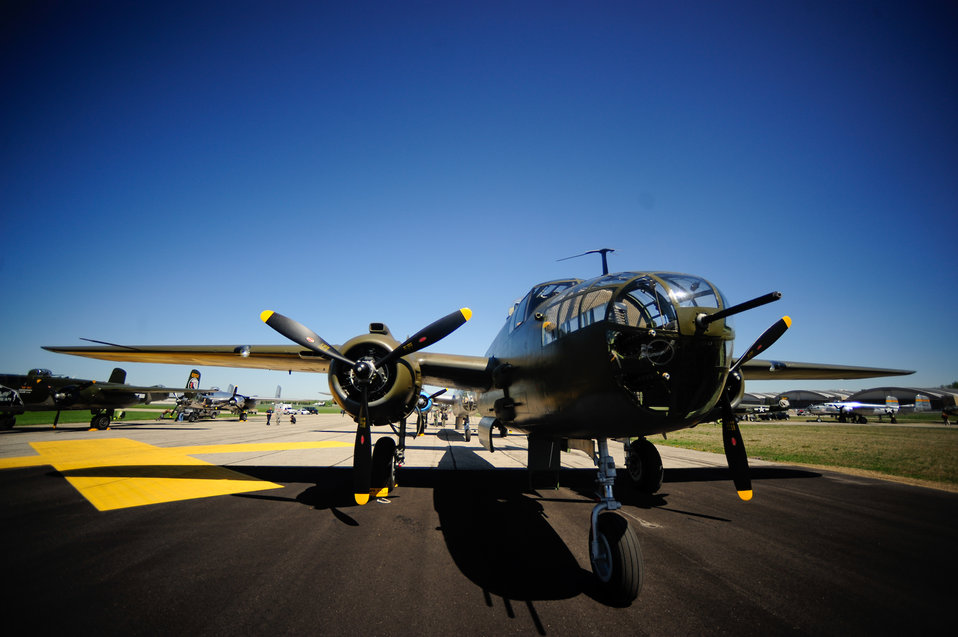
68th Doolittle Raiders Reunion

Vintage B-25 Mitchell bombers stand ready to start engines and take off from the National Museum of the U.S. Air Force at Wright-Patterson Air Force Base, Ohio. They will join a 17-ship formation to take part in a memorial flight honoring the Doolittle Tokyo Raiders on April 18, 2010. The 68th Doolittle Raiders' reunion commemorates the anniversary of the raid on April 18, 1942, by U.S. Army Air Forces Lt. Col. Jimmy Doolittle's squadron of 16 B-25 Mitchell bombers. The raid onTokyo was in response to Japan's attack on Pearl Harbor.